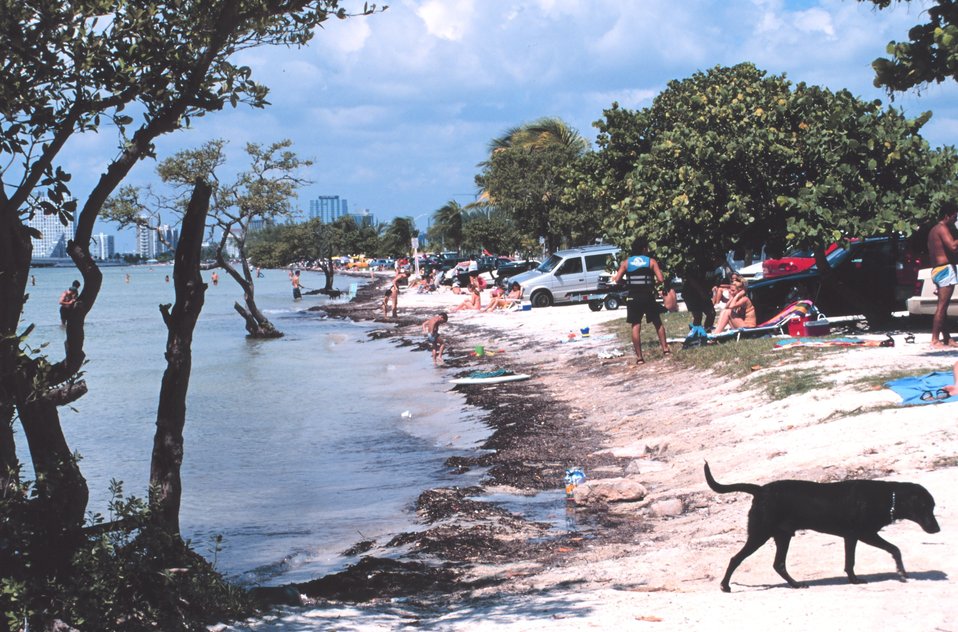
Key Biscayne Beach on the bay side of the island